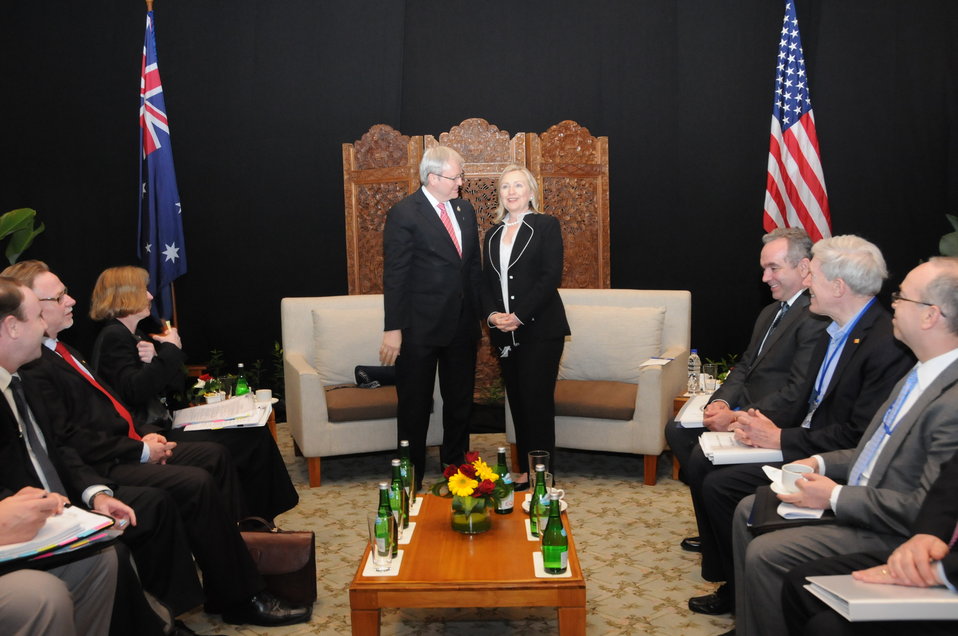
Secretary Clinton Meets With Australian Foreign Minister Rudd

U.S. Secretary of State Hillary Clinton meets with Australian Foreign Minister Kevin Rudd in Bali, Indonesia, on July 22, 2011. Seated on the left is Australian Ambassador to ASEAN Gillian Bird, and seated on the right are U.S. Assistant Secretary of State for East Asian and Pacific Affairs Kurt Campbell and U.S. Under Secretary of State for Economic, Energy and Business Affairs Robert Hormats.